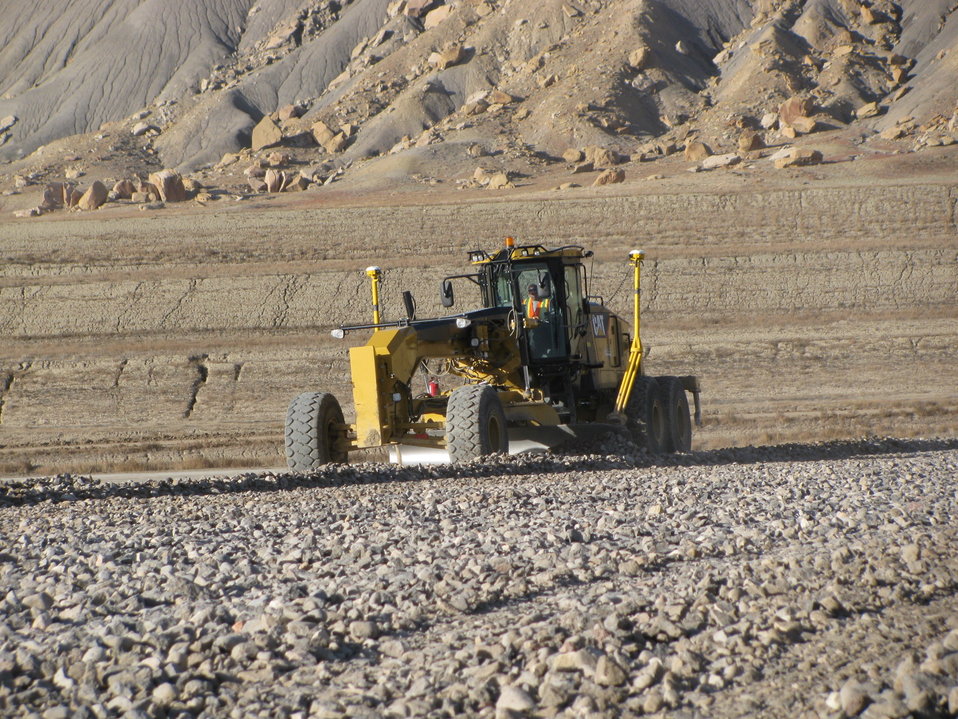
Moab Project Disposes 2 Million Tons of Uranium Mill Tailings with Recovery Act Funds

The Moab Uranium Mill Tailings Remedial Action
Project reached its primary American Recovery and Reinvestment Act milestone ahead of schedule during February 2011 with the disposal of 2 million tons of uranium mill tailings.

Rock for the final cover layer is placed on the Crescent
Junction disposal cell for uranium mill tailings.